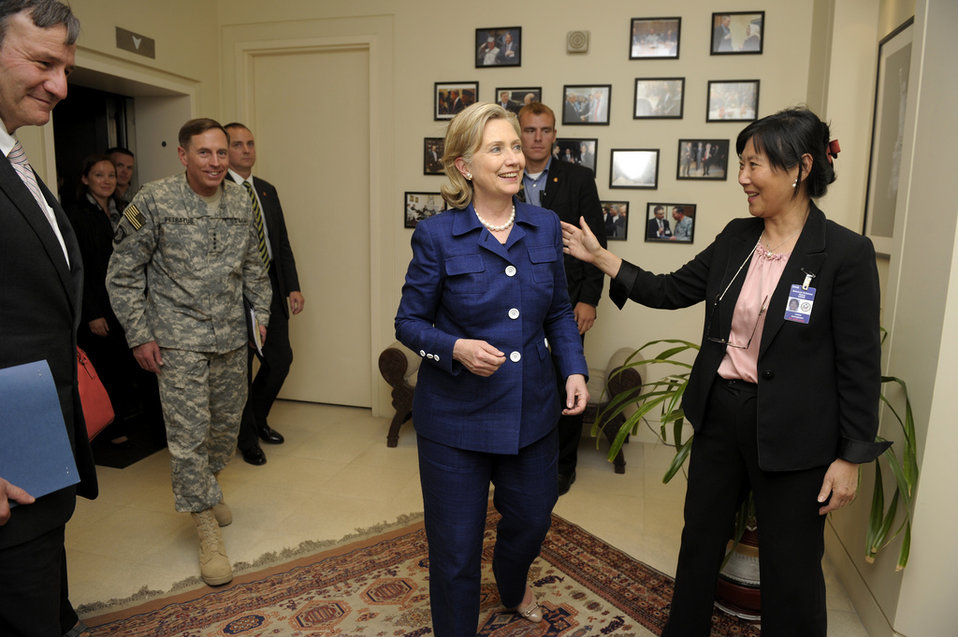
Secretary Clinton Is Greeted at the U.S. Embassy Kabul in Afghanistan

U.S. Secretary of State Hillary Rodham Clinton is greeted at the U.S. Embassy Kabul in Afghanistan on July 19, 2010.